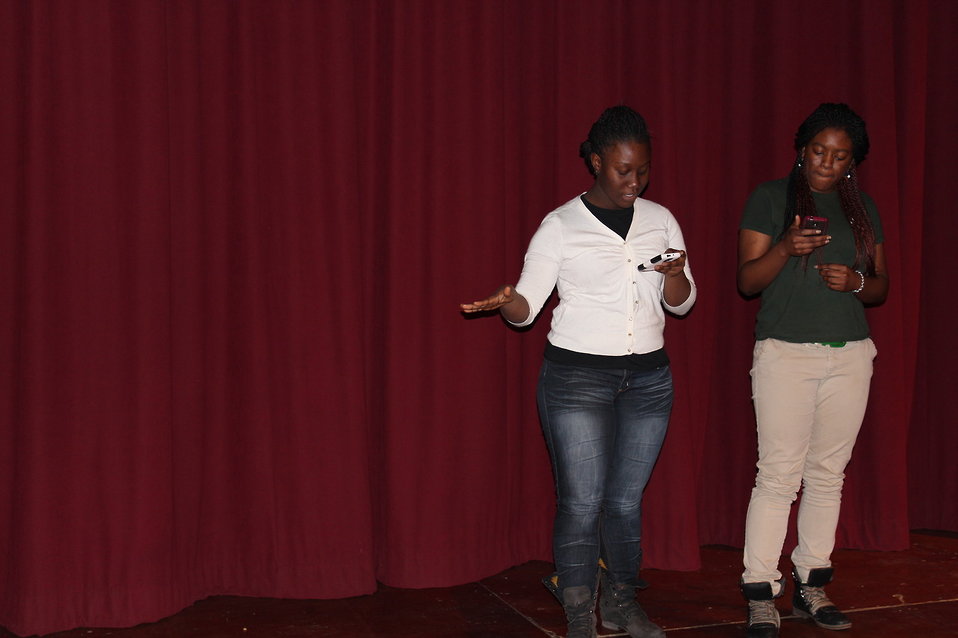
Youth Empowerment Program Poetry Slam held at Alternatives on Jan. 30 which was held to observe National Drug Facts Week and support youth in making healthy lifestyle choices.